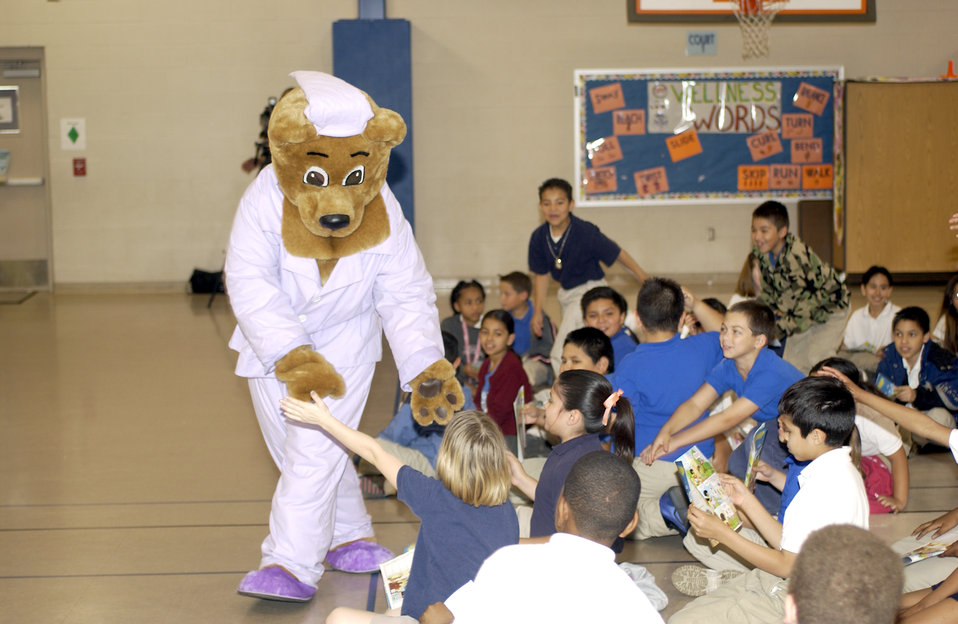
A sleepy surprise

SAN ANTONIO -- P.J. Bear visits with children at a local elementary school to teach them about getting enough sleep. The project was presented by scientists from the Air Force Research Laboratory's fatigue countermeasures branch at Brooks City-Base, Texas, and National Sleep Foundation officials. P.J., who is 2nd Lt. Jennifer Smith, shares sleep-awareness information through classroom activities and comic book-style educational materials designed to appeal to children ages 6 to 10.